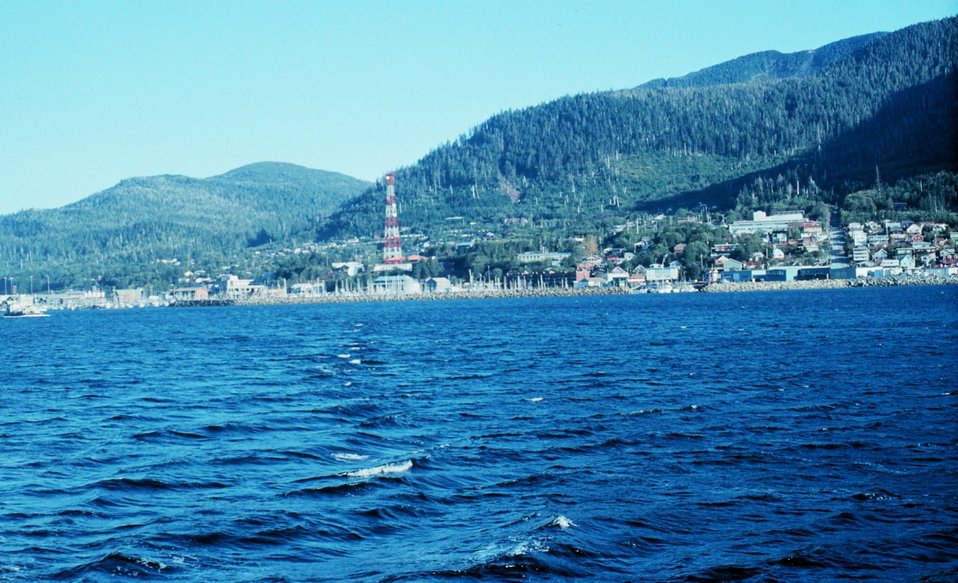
Ketchikan